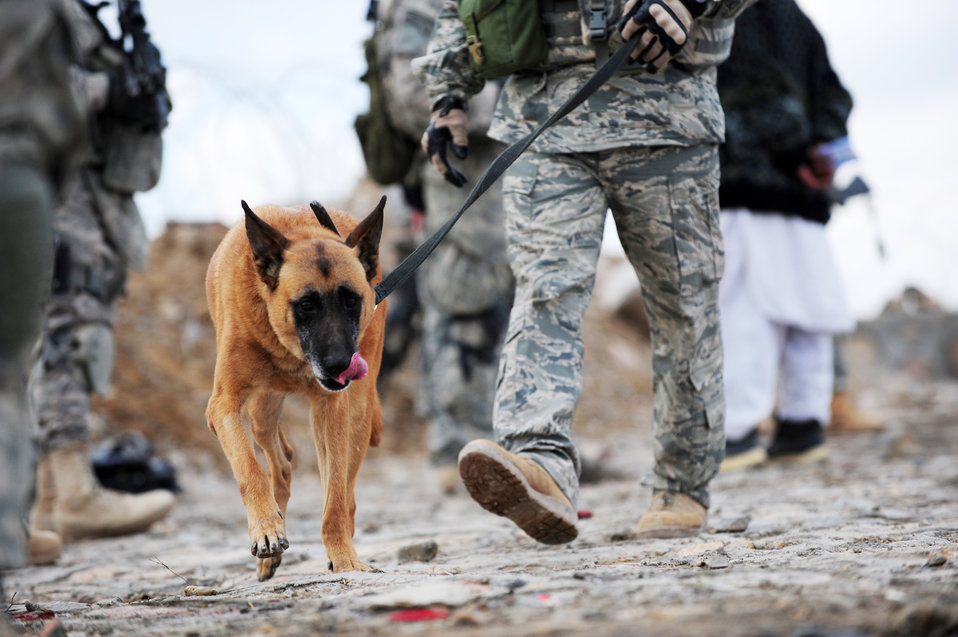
On the scent...

Staff Sgt. James Rybacki and his military working dog Torca search for narcotics Jan. 3, 2010, at a checkpoint near Dabaray, Afghanistan.